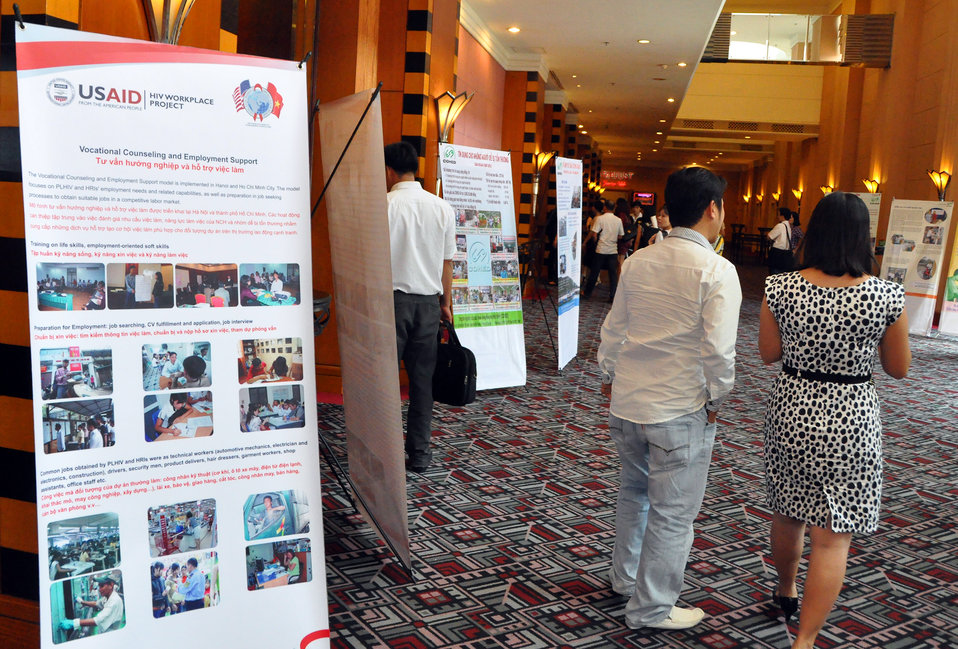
Microfinance Plan for People at Risk or Affected by HIV Found Sustainable

USAID supported a pilot model for microfinance, including credit, savings and insurance, for people living with or affected by HIV or those at high risk of becoming infected. After one year, the model has been found to be successful, replicable, and sustainable.